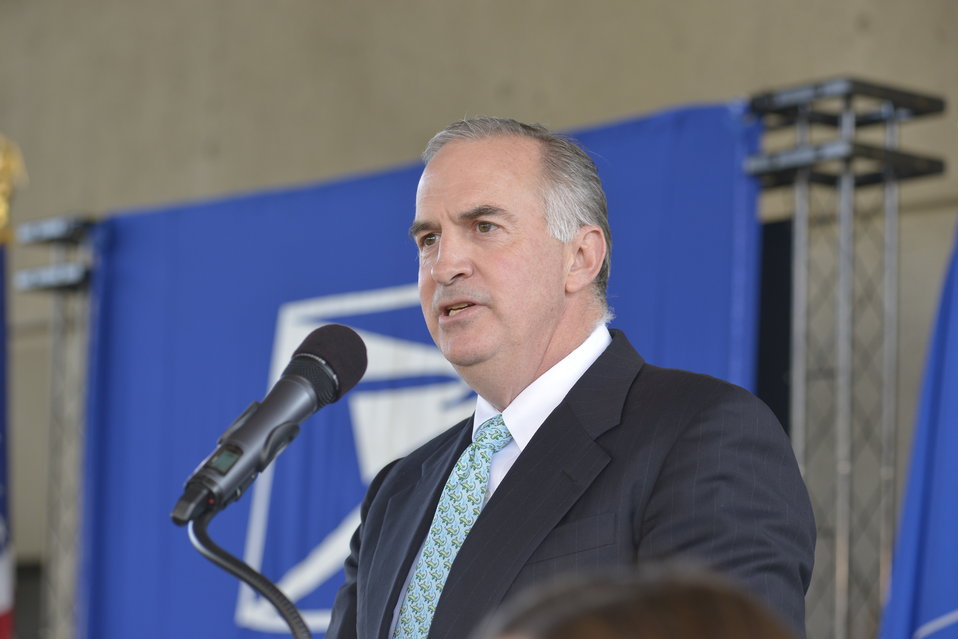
U.S Postal Services introduces a new Global: Sea Surface temperatures forever stamp at the Earth Day program at Department of Energy on April 22, 2014. ( T.Day, C.Williams, C.Anderson II, J.Colin Ph.D, Dr. K. Sullivan, K.Tobin Ph.D, W. Gicher Jr)